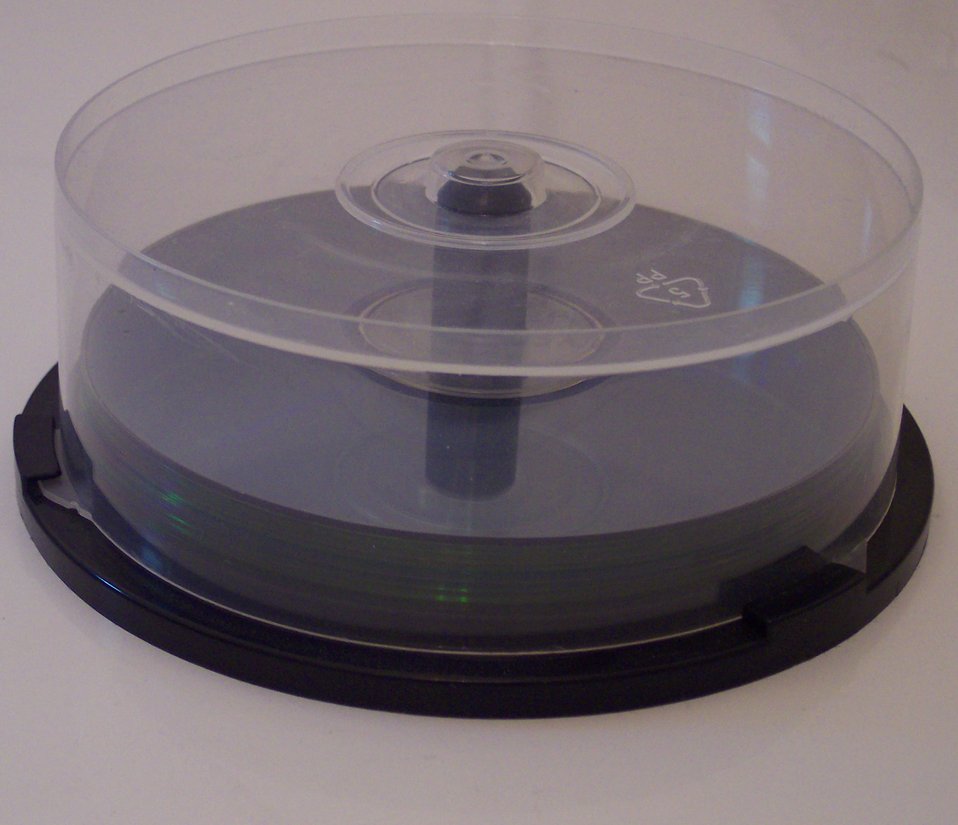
025er geschlossen